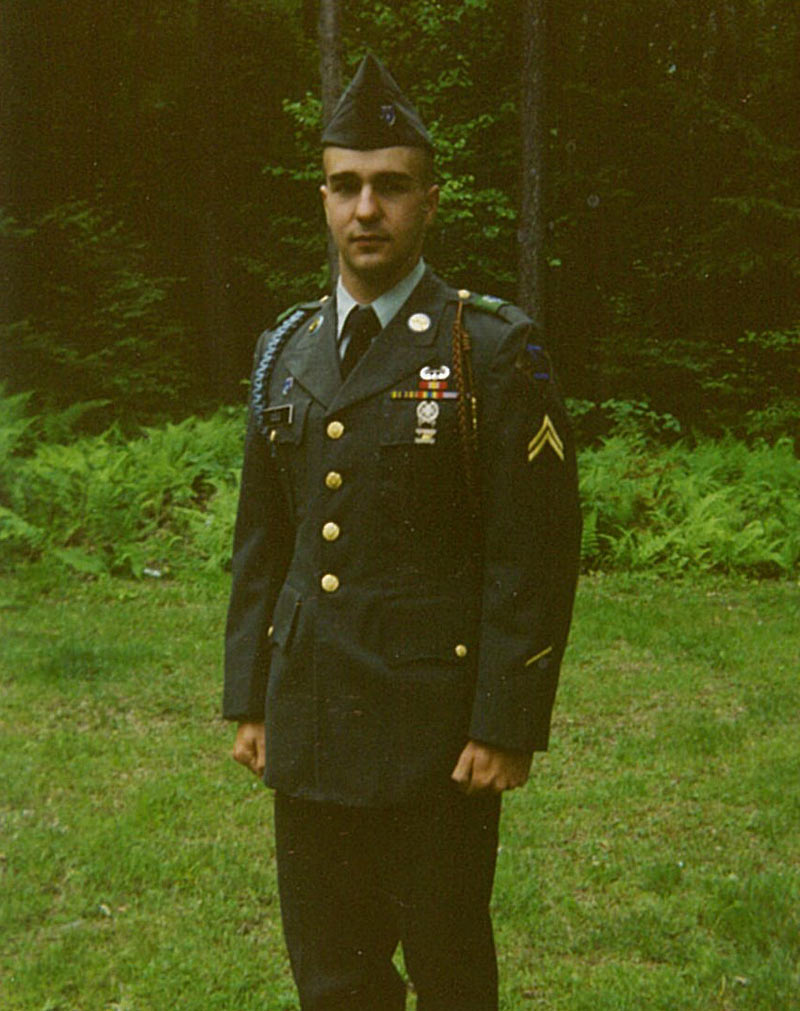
Eric Cole-Mountain-Prairie Region

Army veteran Eric Cole serves as Refuge Biologist at National Elk Refuge in Wyoming.